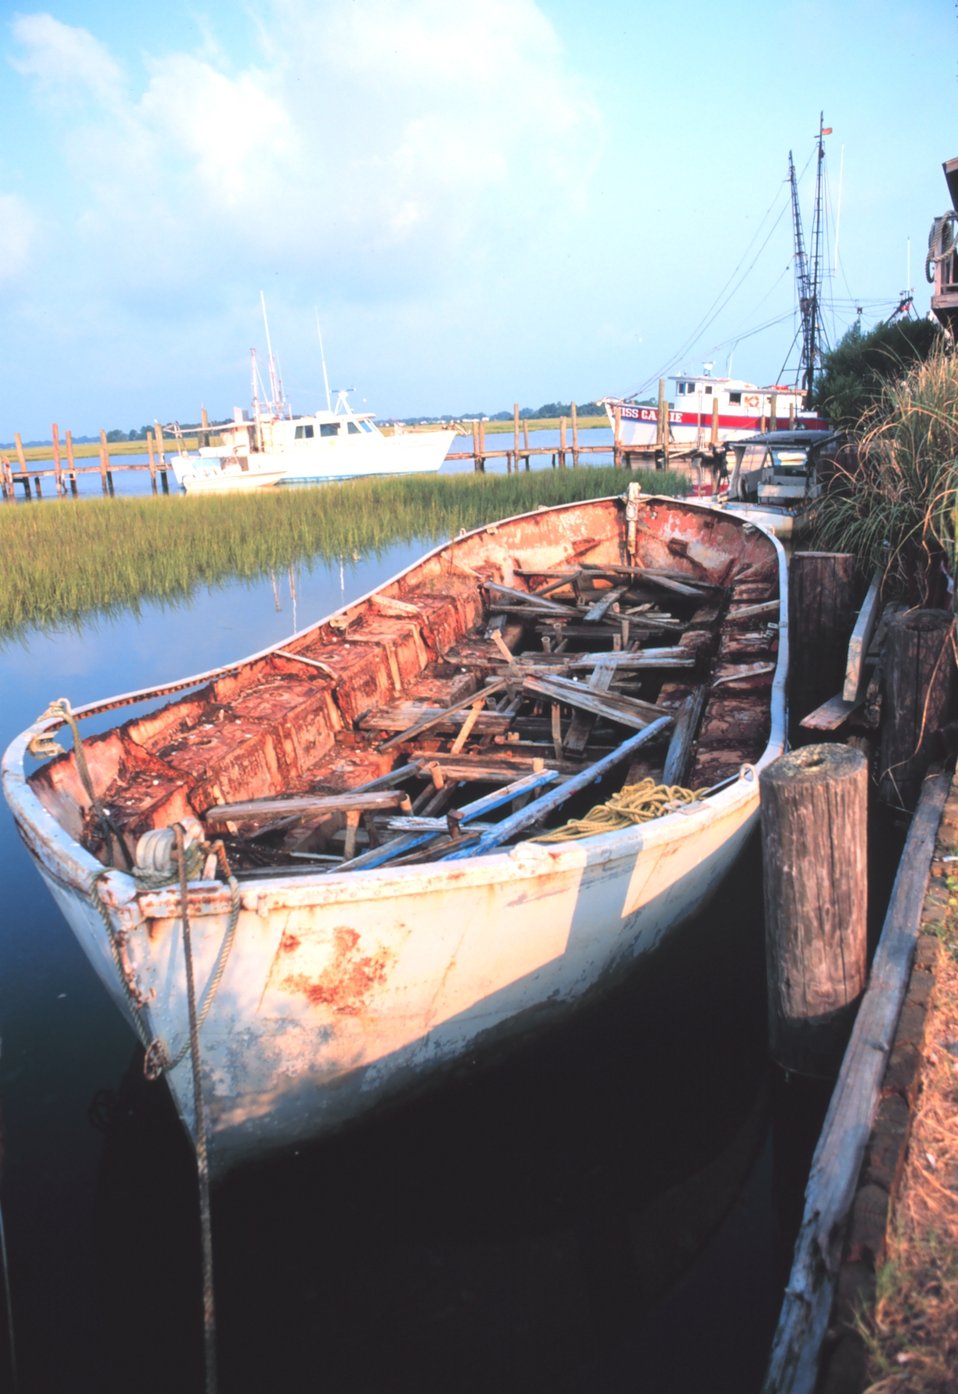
A derelict boat rotting away in the wetlands of Folly Island